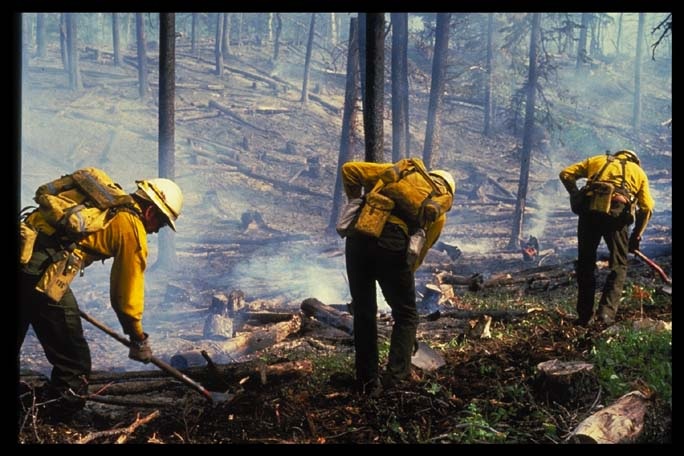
Line construction